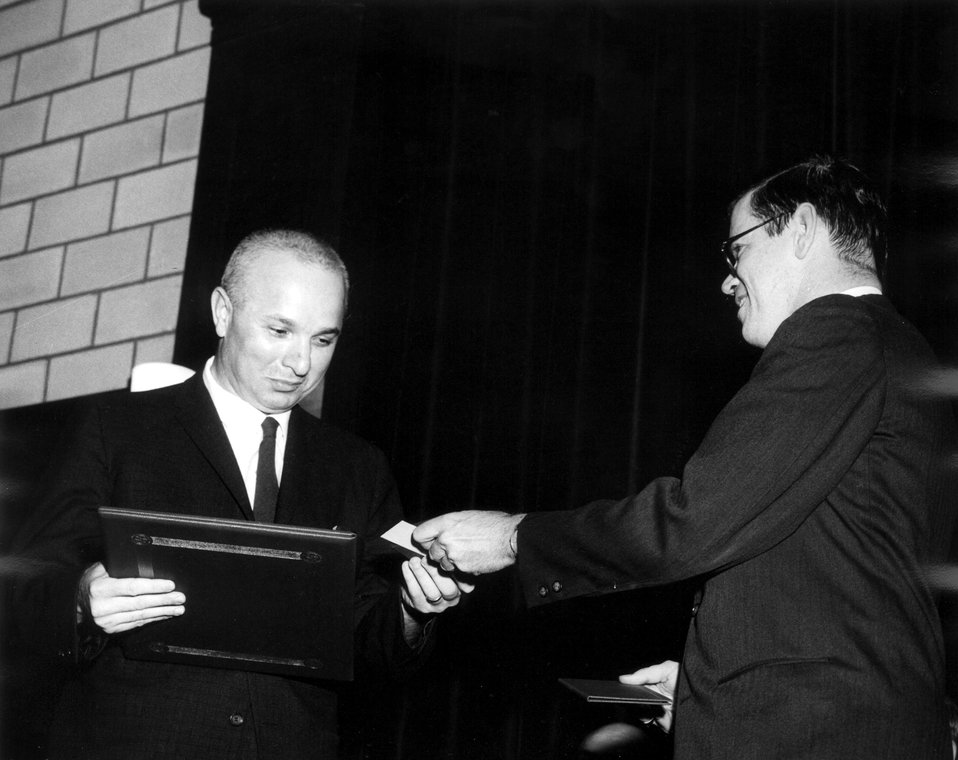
Lawrence Award, 1966.